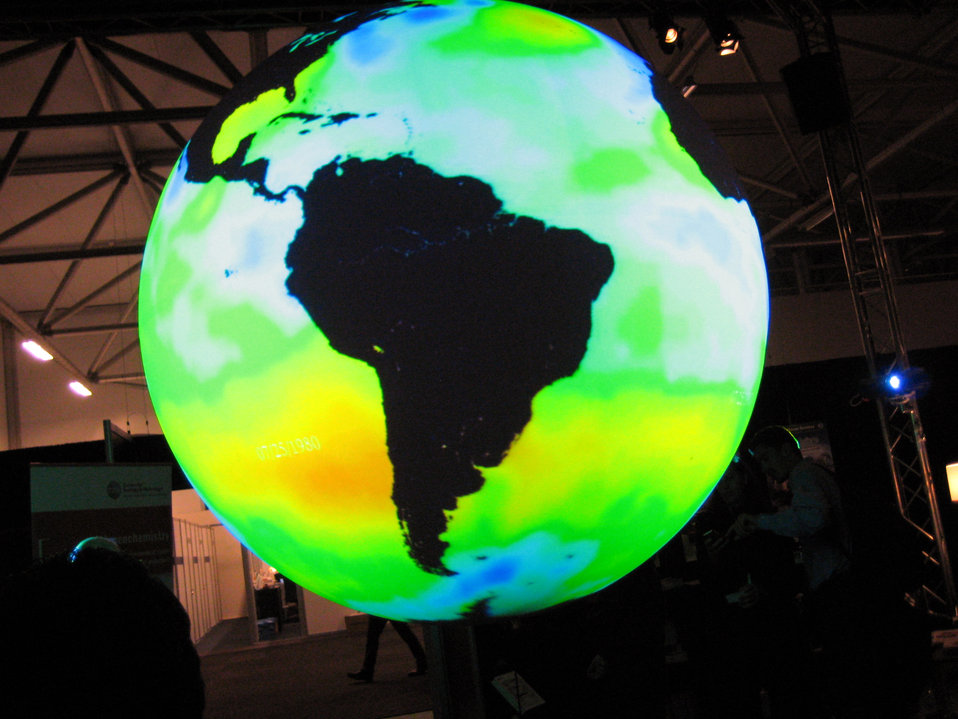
Science on a Sphere at the U.S. Center during COP15 (Conference of the Parties to the UN Framework Convention on Climate Change) in Copenhagen, Denmark December 10, 2009.